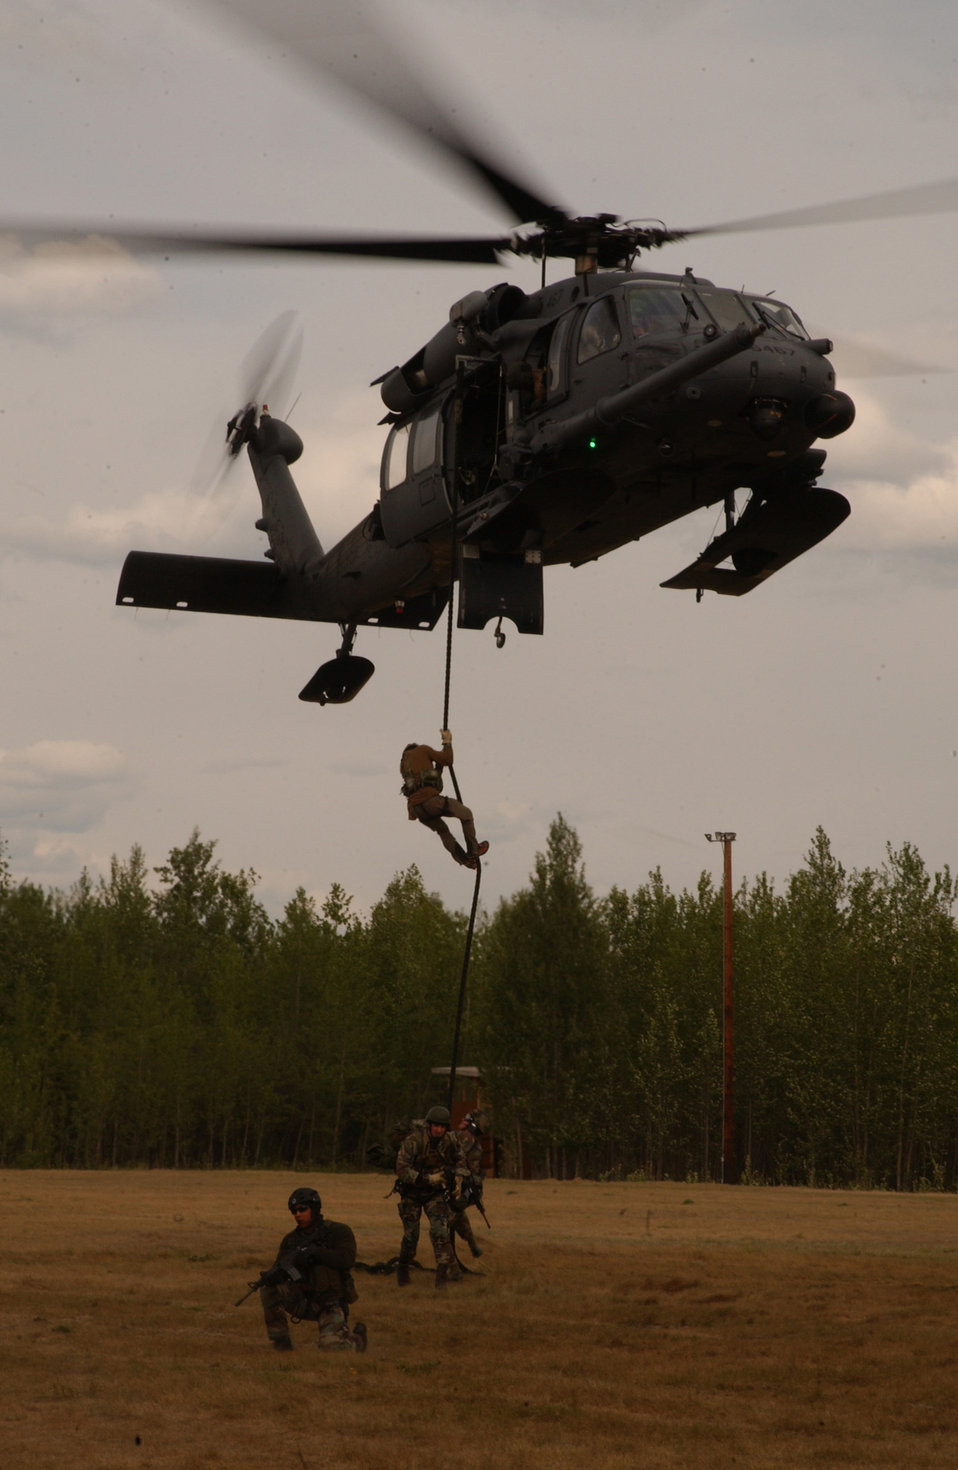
To the rescue during Northern Edge 2006

Airmen from the 31st Rescue Squadron at Kadena Air Base, Japan, fast-rope out of an HH-60 Pave Hawk during a combat search and rescue mission for exercise Northern Edge 2006 at Fort Wainwright, Alaska, on June 6, 2006. Northern Edge is a joint training exercise hosted by Alaskan Command and is one of a series of U.S. Pacific Command exercises that prepare joint forces to respond to crises in the Asian Pacific region.